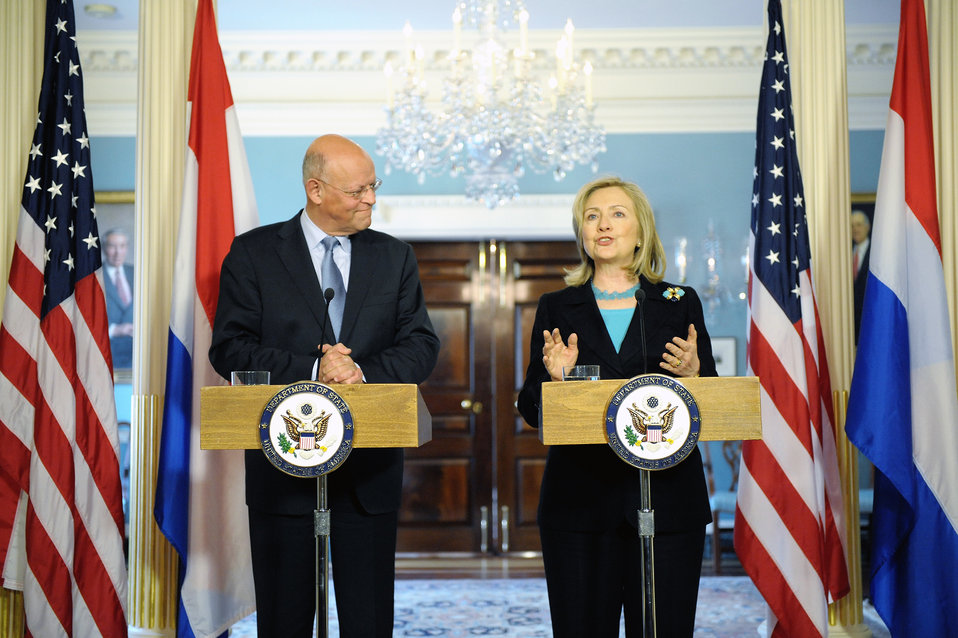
Secretary Clinton and Dutch Foreign Minister Rosenthal Hold a Joint Press Conference

U.S. Secretary of State Hillary Rodham Clinton and Dutch Foreign Minister Uri Rosenthal hold a joint press conference after their bilateral meeting, at the U.S. Department of State in Washington, D.C., on April 21, 2011.